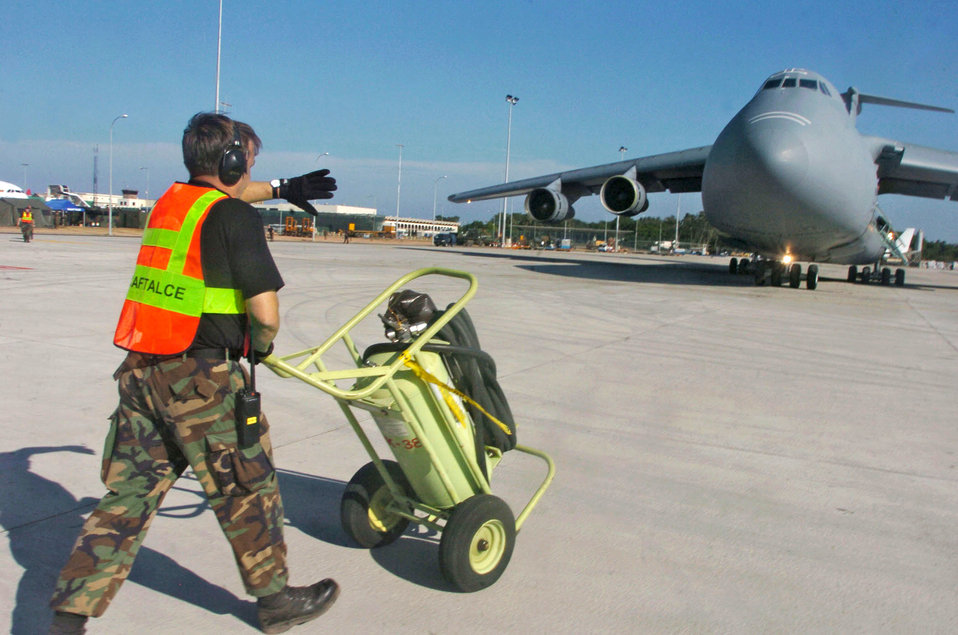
A Galaxy far, far away

BANDANAIKE, Sri Lanka -- Master Sgt Jeff Wisley tends to a C-5 Galaxy aircraft that just landed at the international airport here supporting Operation Unified Assistance. U.S. servicemembers are helping bring relief supplies and equipment to various locations in Sri Lanka. Sergeant Wisley is assigned to the Pacific Air Forces' tanker airlift control element at Yokota Air Base, Japan. The aircraft is assigned to the 60th Airlift Wing at Travis Air Force Base, Calif.